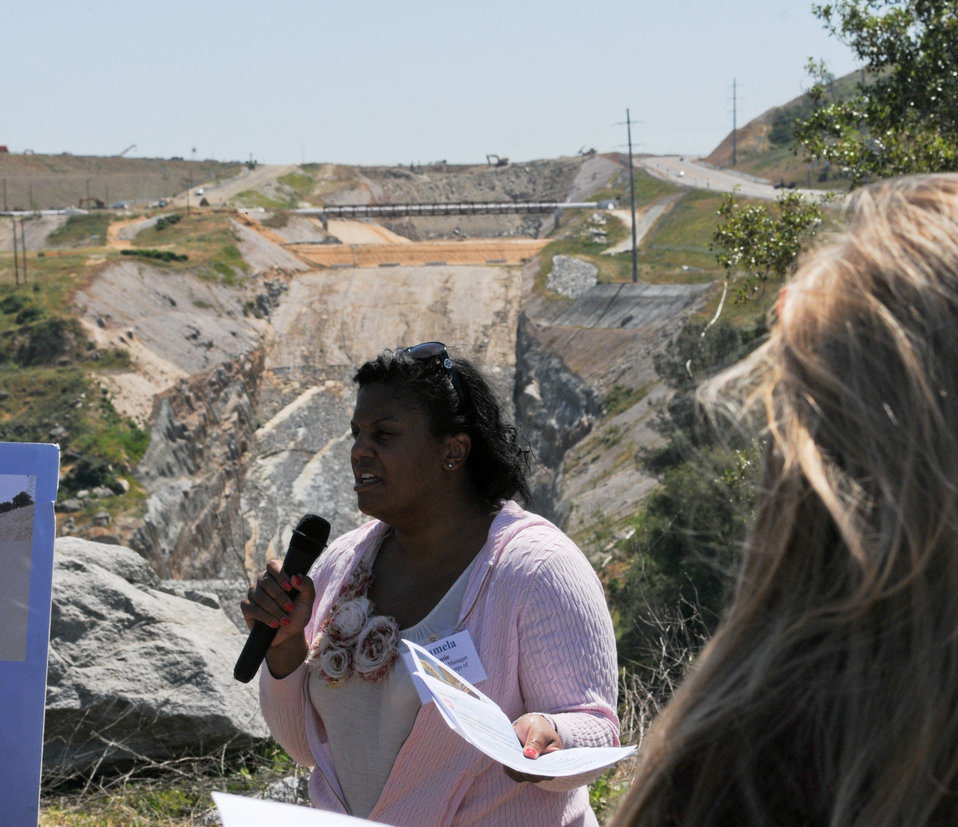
FOLSOM, Calif. (May 4, 2011) – Pamela Amie, one of the project managers for the U.S. Army Corps of Engineers Sacramento District’s portion of the Joint Federal Project (JFP), informs more than 50 participants from the Water Education Foundation’s Flood Management tour on the phases of the Folsom Dam and Spillway here May 4.

Amie, one of three Corps project managers for the JFP, joined Corps water manager Kyle Keer at the two-day event, which runs through May 5 and aims to educate participants on the Corps role in flood risk reduction. The tour – attended by many water experts and engineering consultants from throughout California – will include field trips to the Bear River, West Sacramento, the Pocket area and several of the area’s weirs.